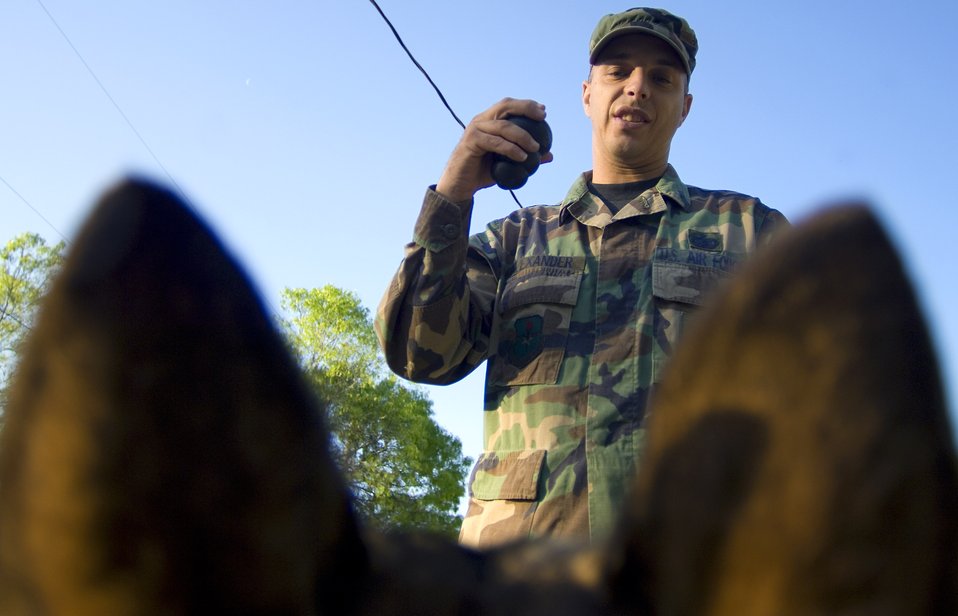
Canine Boot Camp: Instructors bark orders, recruits respond in kind

Military working dog trainer Staff Sgt. Shawn Alexander is an expert at teaching obedience to young canines at Lackland Air Force Base, Texas. Military working dog training is a Department of Defense program, where all services work together to train dogs for patrol and bomb/drug detection in the field.